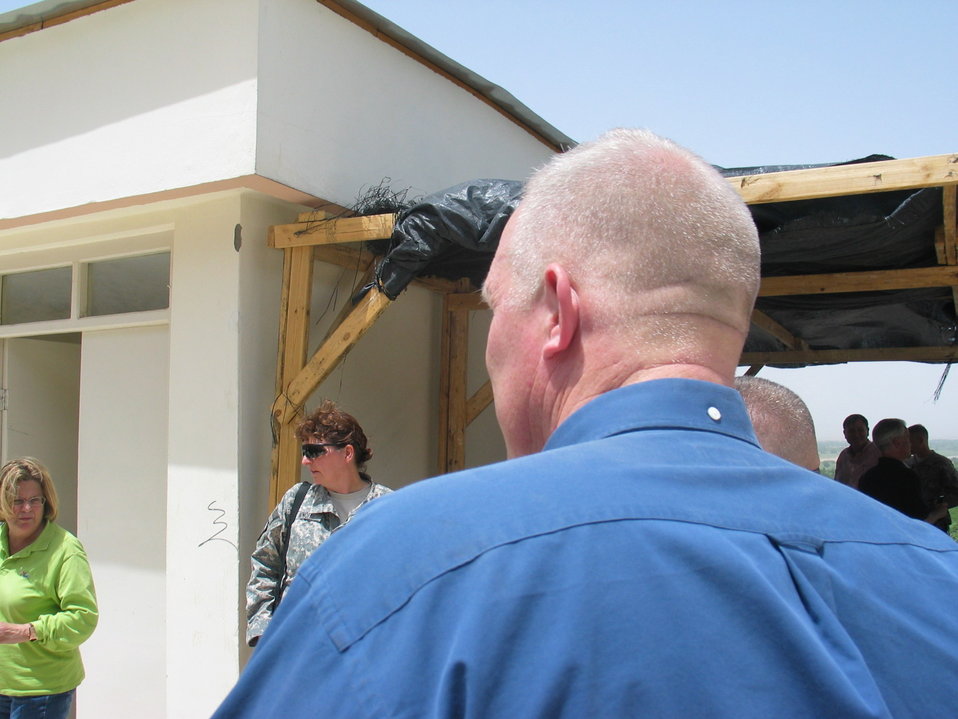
CODEL Berman